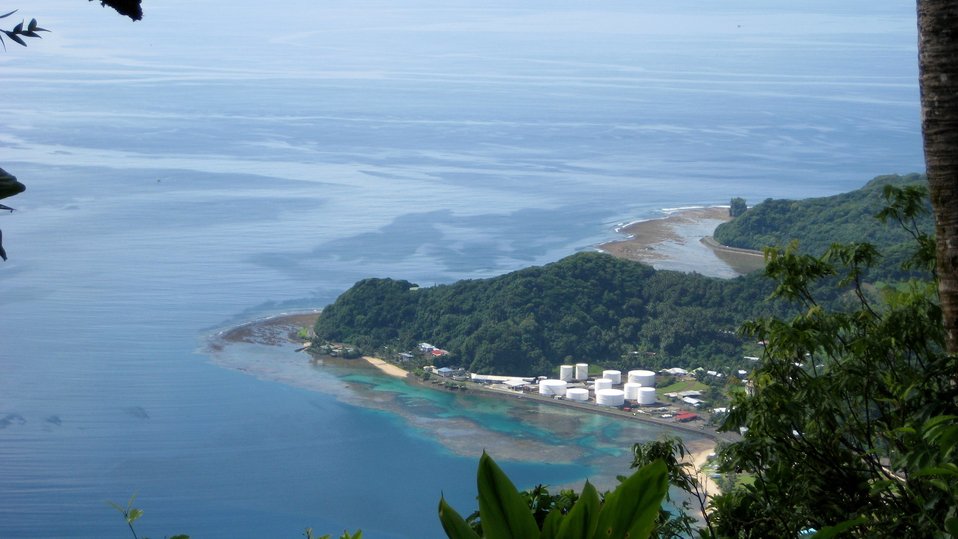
The fuel tanks at the entrance to Pago Pago Harbor.